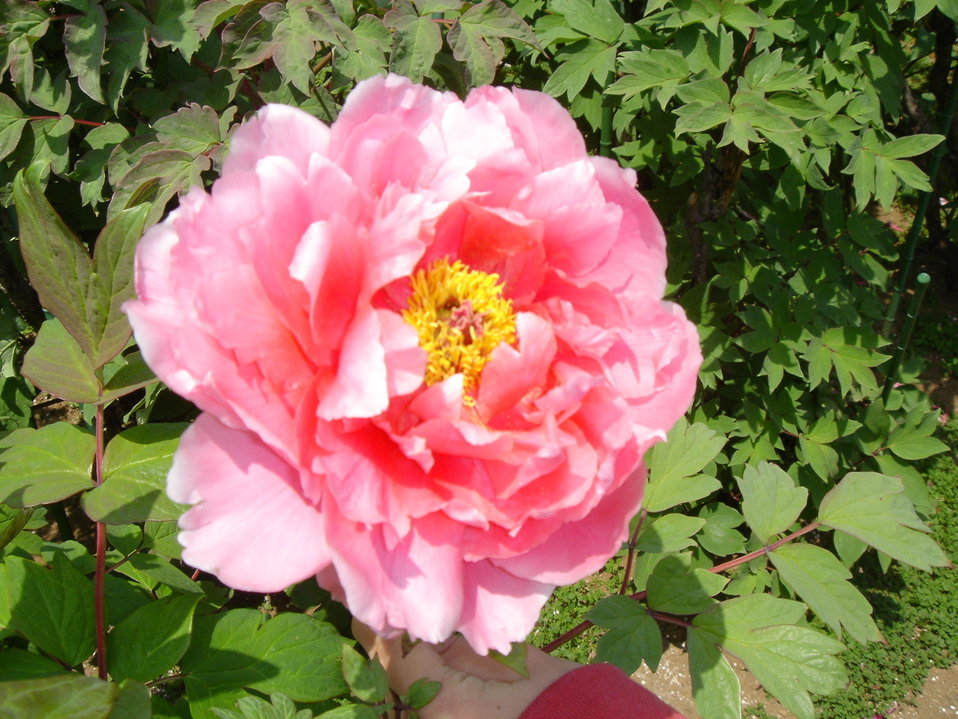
Paeonia suffruticosa4